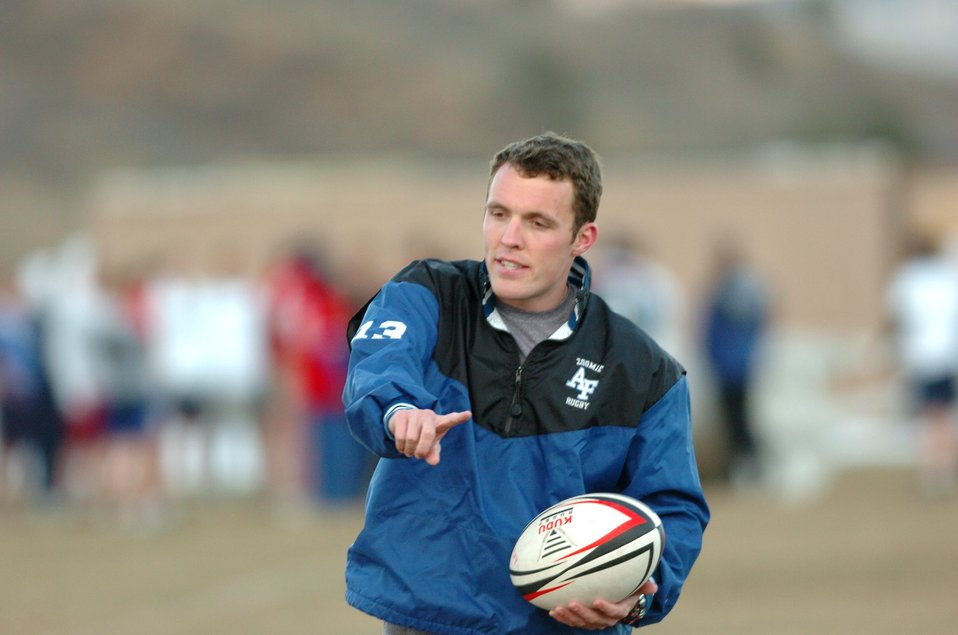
Injured cadet rugby player returns to field as a coach

Cadet 2nd Class Marc Ward motions March 20 to Air Force Academy rugby players to move the ball down the field. Cadet Ward suffered a debilitating injury during a rugby game in 2003 in a game against the University of California at Berkeley. He lost full use of his right arm for six months, but has since made a full recovery and now coaches as part of the academy rugby team.